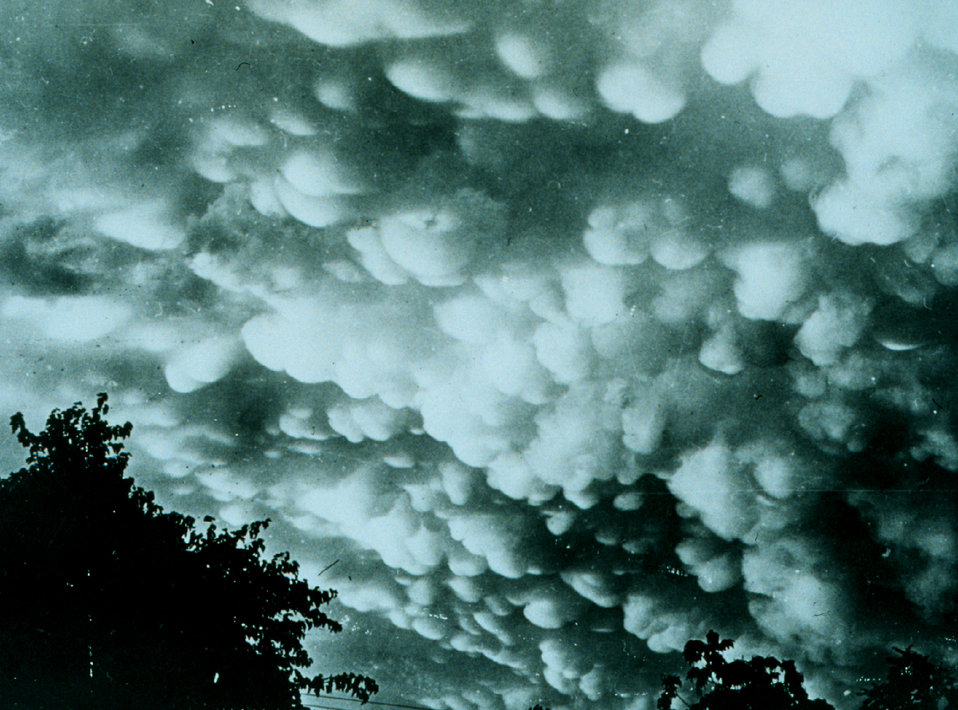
Mammatocumulus - often associated with tornado development